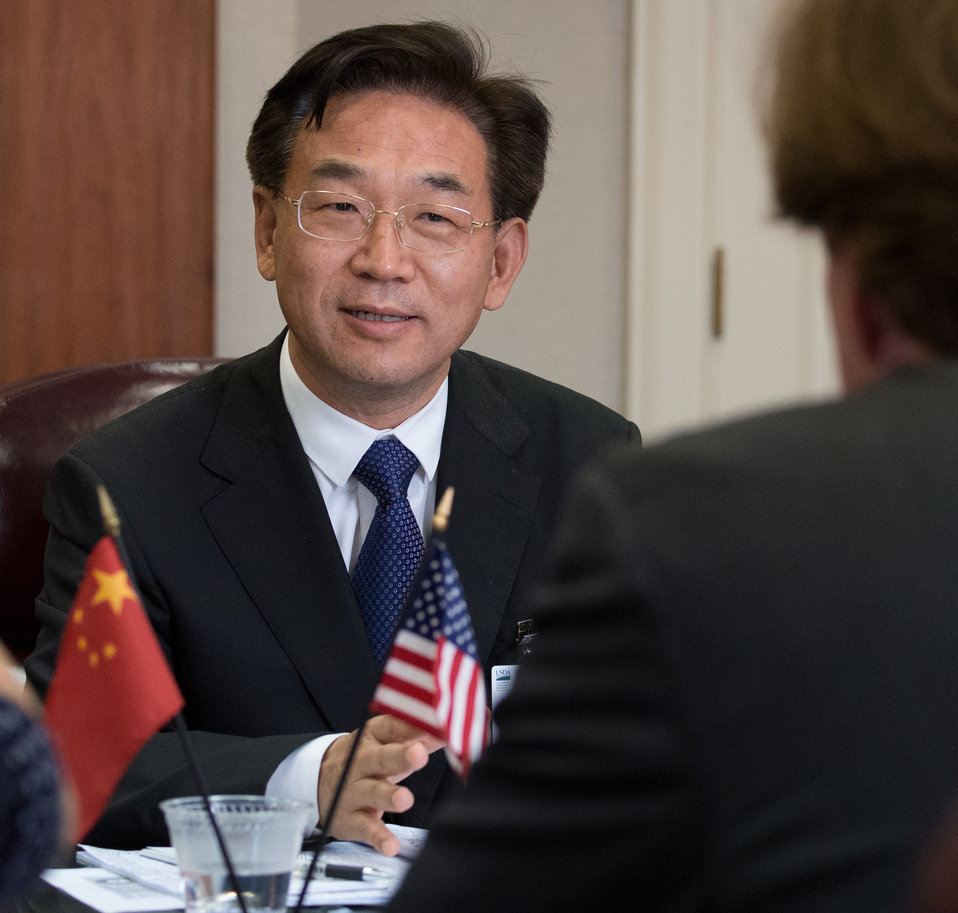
The People’s Republic of China Ministry of Agriculture (MOA) Vice Minister H.E. Zhang Taolin heads the Chinese Agricultural Delegation meeting with U.S. Department of Agriculture (USDA) Under Secretary for Natural Resources and Environment (NRE) Robert Bonnie and other USDA leaders at the USDA headquarters Whitten Building, in Washington, D.C., on Friday June 13, 2014.